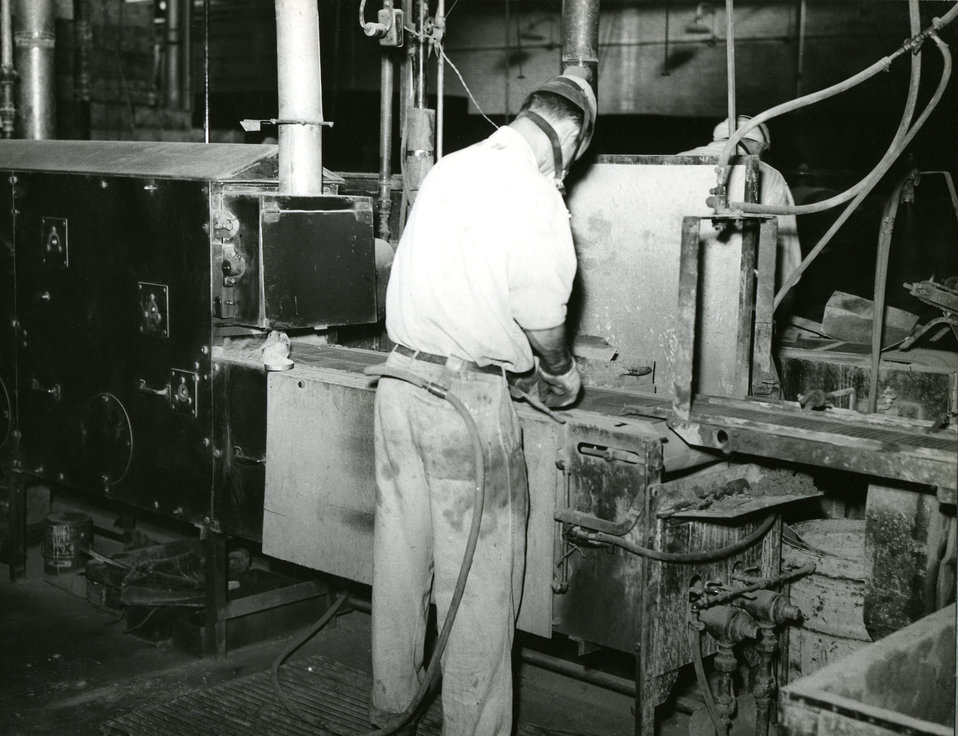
Published in the 'Public Health Bulletin', No. 262, 1941, this historic image, which was provided by the Center for Disease Control's (CDC), National Institute for Occupational Safety and Health (NIOSH), depicted a battery factory in which a worker was in the process of performing a 'plate pasting' operation during the assembly of a lead-acid storage battery. Lead dioxide (PbO2) paste is spread upon what will become the battery's cathode. At the completion of this step, the partially-assembled battery will be placed into a drying oven. Note the inclusion of an exhaust system situated in close proximity to the action at hand. Lead-acid batteries are potentially dangerous, both in their finished state, as well as during their manufacture. Precautions need be taken when building a battery, including the use of goggles, gloves, and filtered breathing devices. This worker was wearing a protective breathing mask and gloves.